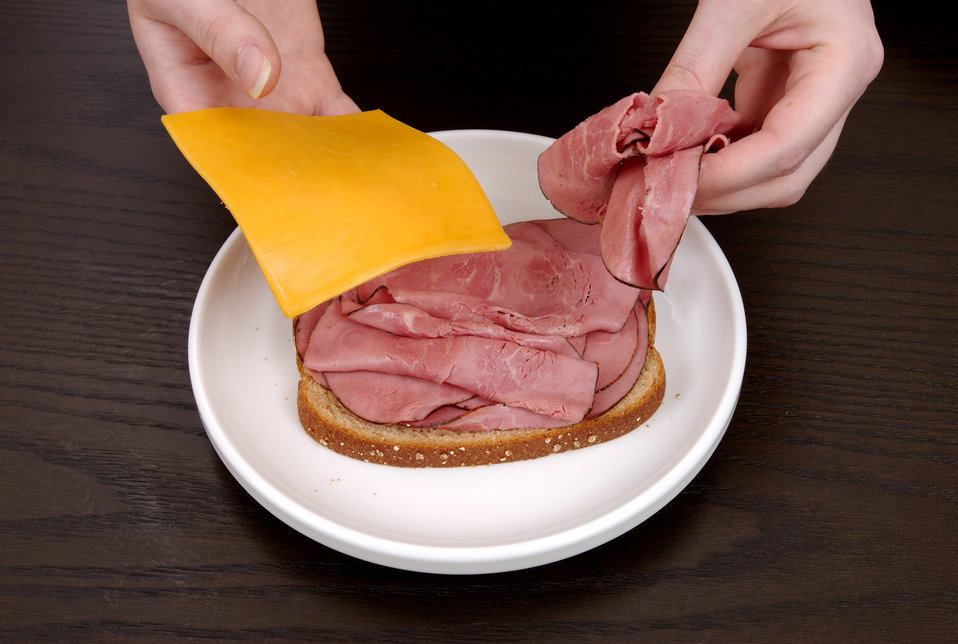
Choices not only involve which foods you eat, but how much as well. Note that this ham and cheese sandwich is made with attention to quantity, and caloric intake. A single piece of cheese, along with three or four slices of very lean ham, makes for a terrific, light and tasty lunch or snack.